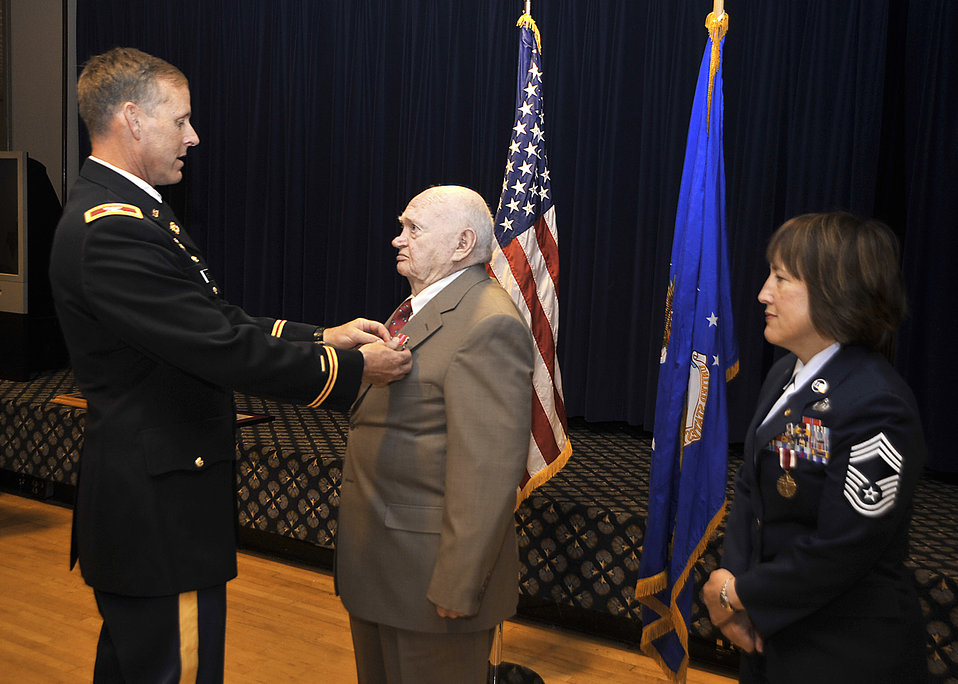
Bronze Star

Army Col. Timothy Coffin, the deputy commander of Space and Missile Defense Command and Army Strategic Command, pins the Bronze Star Medal on retired Army Sgt. 1st Class Daniel Porter, as his daughter, Chief Master Sgt. Nancy Geisler, looks on during her retirement ceremony June 13, 2011, at Peterson Air Force Base, Colo. Sergeant Porter earned the Bronze Star Medal for his service in Vietnam from 1969 to 1970, while serving with the 4th Infantry Division, currently located at Fort Carson, Colo.